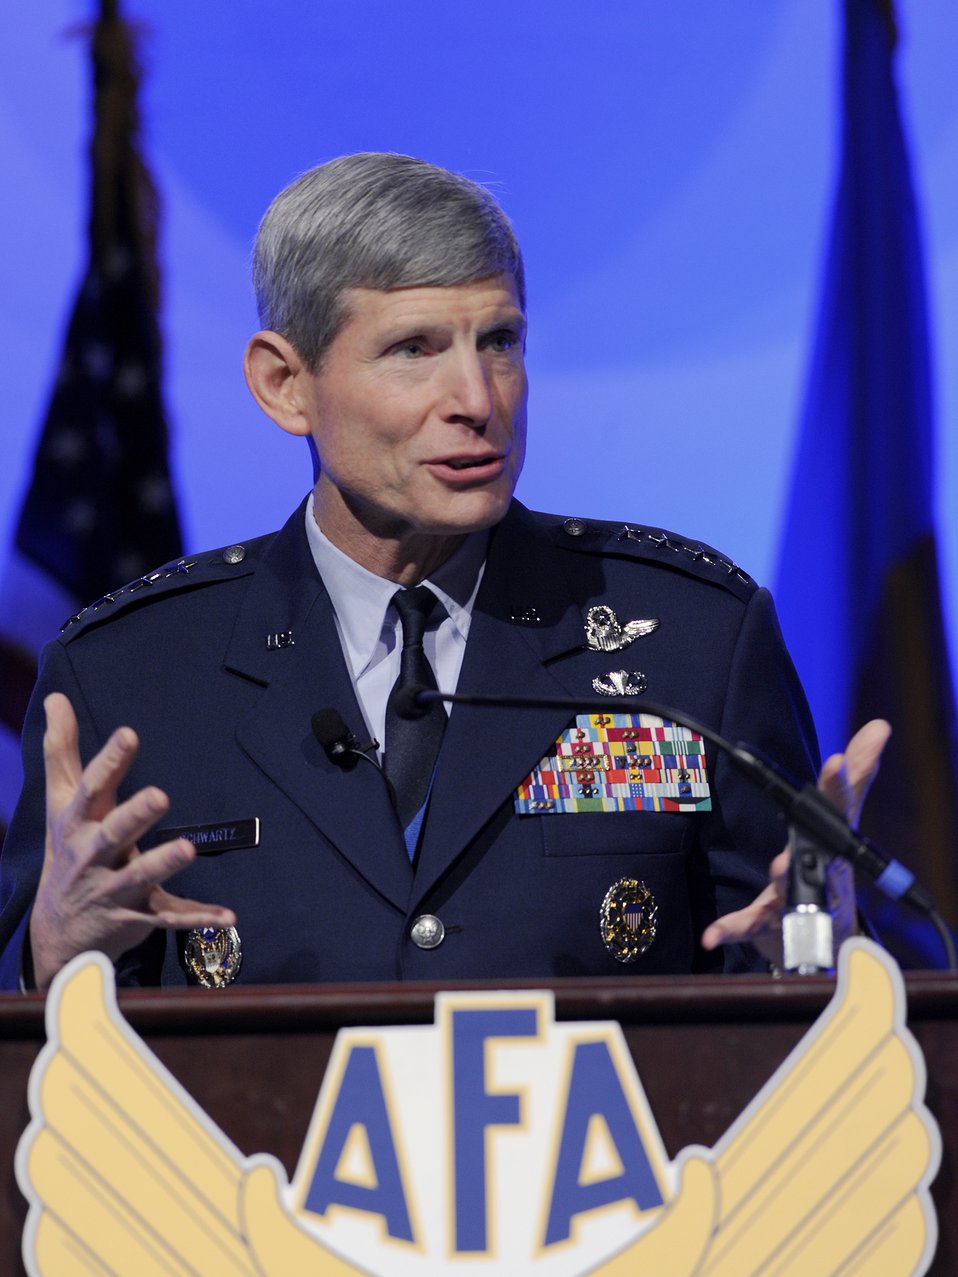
CSAF's AFA Kick-Off Speech

Air Force Chief of Staff Gen. Norton Schwartz addresses attendees Feb. 23, 2012, during the Air Force Association's 2012 Air Warfare Symposium and Technology Exposition in Orlando, Fla. He told the audience the Air Force will maintain its readiness despite the austere fiscal environment.